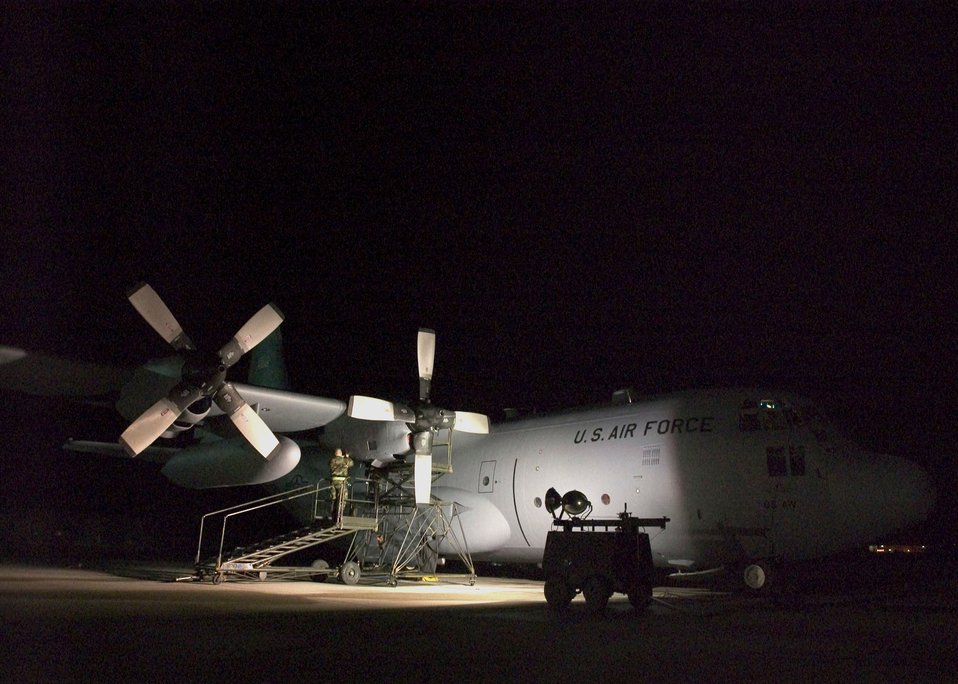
All night long

RAMSTEIN AIR BASE, Germany -- Airmen of the 86th Aircraft Maintenance Squadron prepare to work on a C-130 Hercules here. Work completed during night shifts is vital to the mission, officials said. The planes that return from a mission with problems need to be ready to fly the next day.